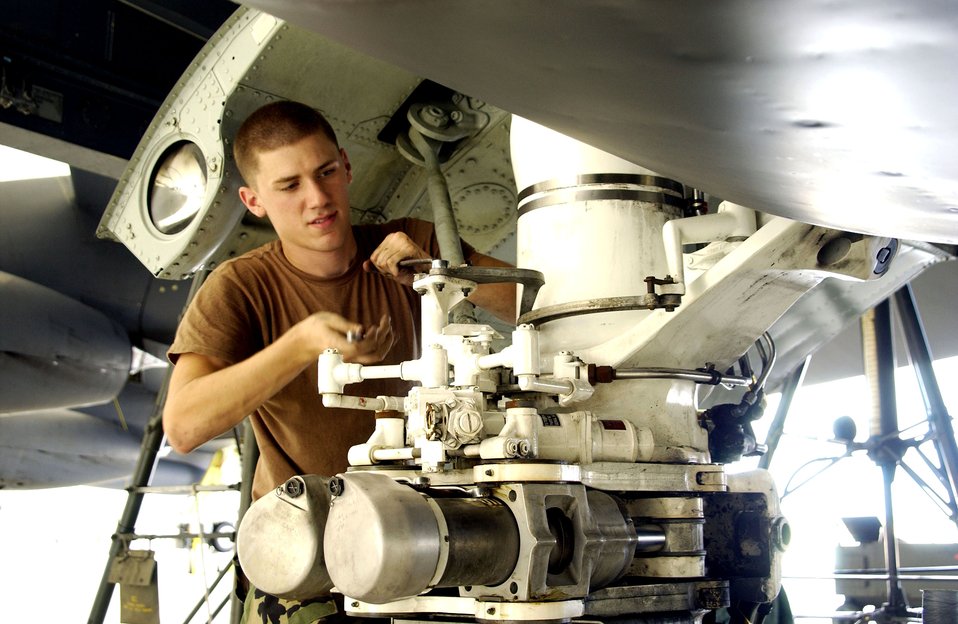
Barksdale Airman take care of B-52 business 7,000 miles away

Senior Airman Christopher Hirsch works on the landing gear of a B-52 Stratofortress deployed to Andersen Air Force Base, Guam. Airman Hirsch is deployed with the 36th Expeditionary Aircraft Maintenance Squadron, 7,000 miles from his home station at Barksdale AFB, La. The 36th EAMXS has generated more than 110 sorties in support of Pacific theater operations.